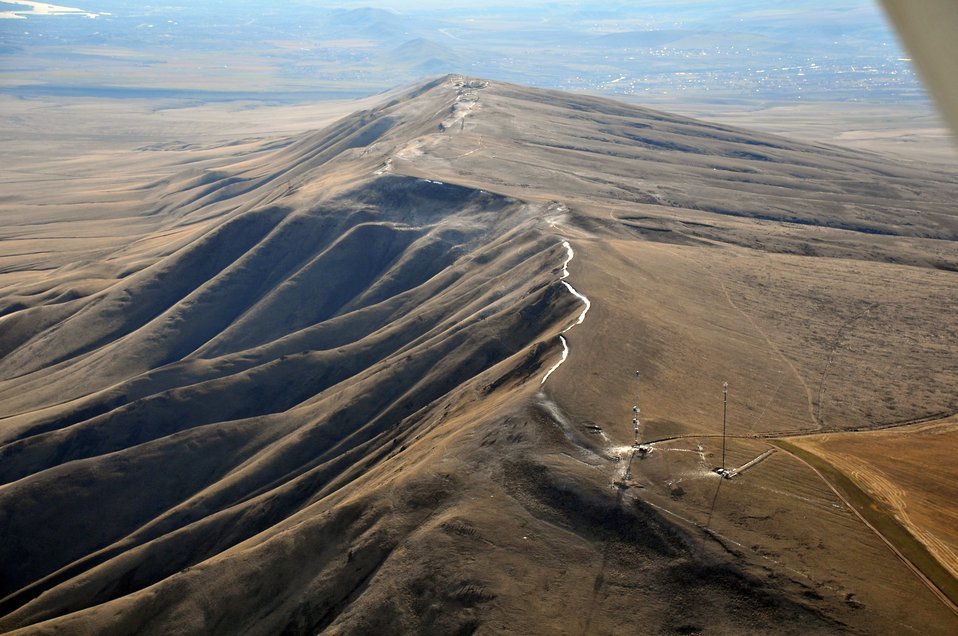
Arid Lands Ecology Reserve

Once a buffer area for the U.S. Army, the Arid Lands Ecology Reserve is where workers removed more than 20 facilities and hundreds of debris sites and completed the first footprint reduction for the Hanford Site.